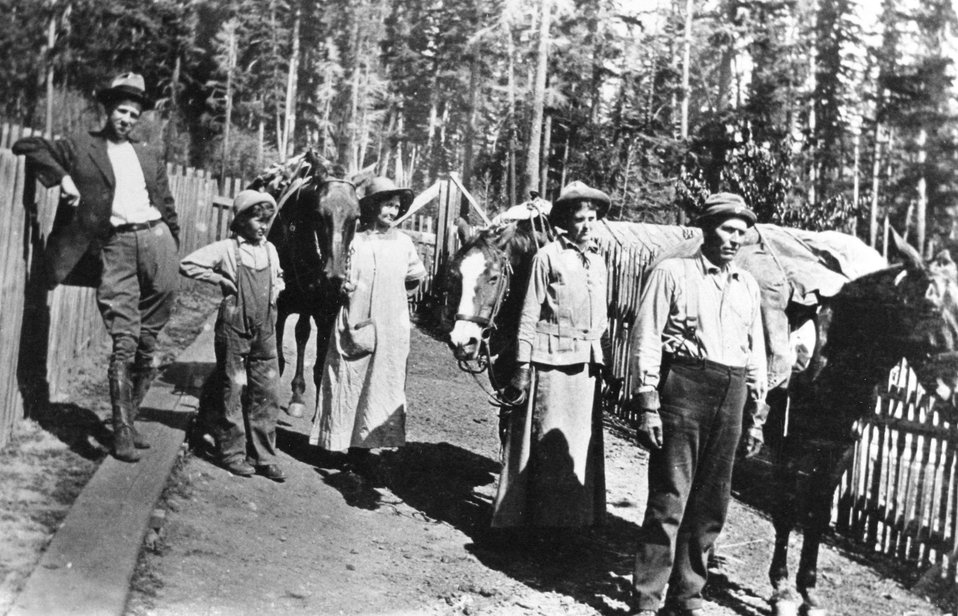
Tom and Bessi Billings at right. Taken at Illahe.